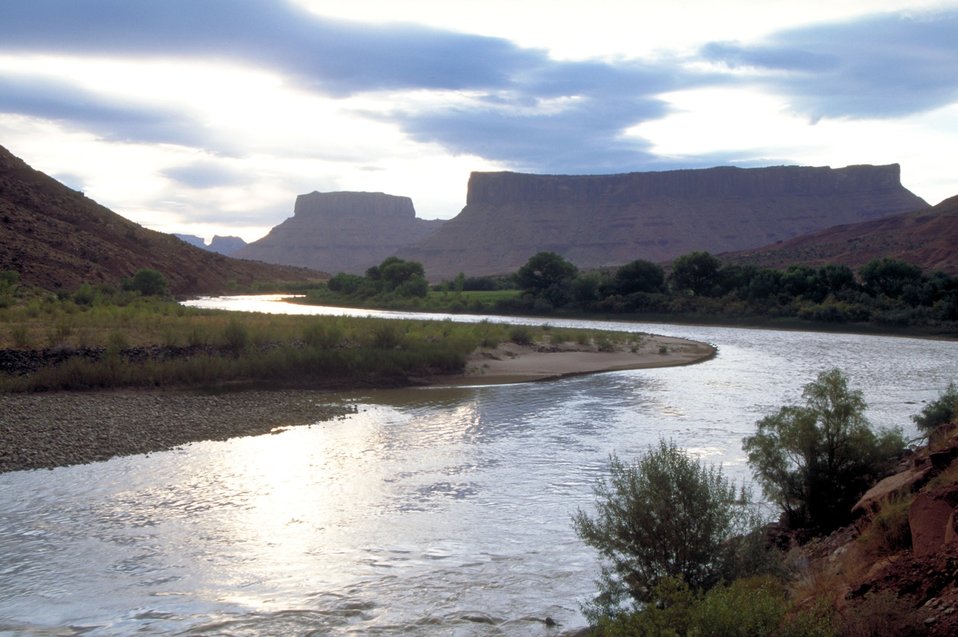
Colorado River near Moab, Utah.